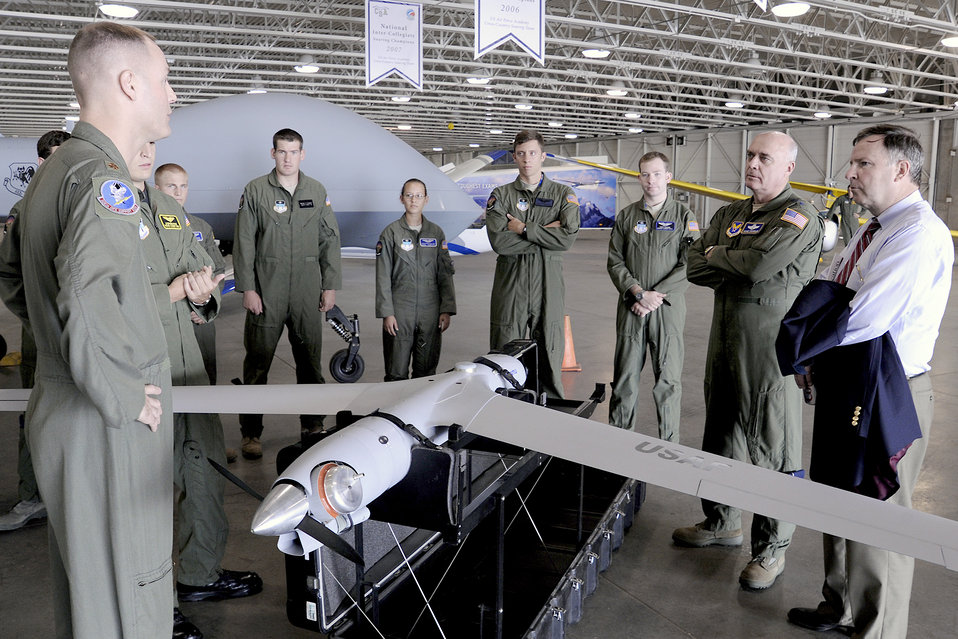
Scan Eagle

Maj. Jeff Ray briefs Air Force Vice Chief of Staff General Carrol H. Chandler and Congressman Doug Lamborn on the Academy's Remotely Piloted Aircraft Scan Eagle program July 24, 2010. The Scan Eagle was chosen to familiarize U.S. Air Force Academy cadets with RPA operations and give them first-hand knowledge of how these systems can be integrated into Air Force operations to support war fighters worldwide.